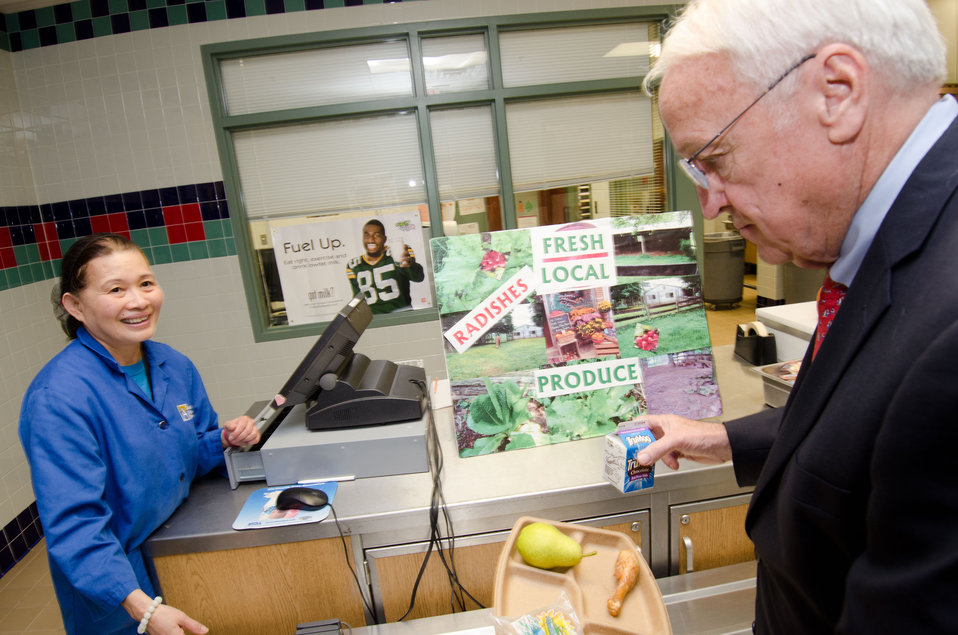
After students had their lunches, Under Secretary for Food, Nutrition and Consumer Services Kevin Concannon made his lunch choices and paid for his meal, during a National School Lunch Week event at Nottingham Elementary School in Arlington, VA, on Wednesday, October 12, 2011. (The schedule and menu were not altered for the event). Today's menu included roasted chicken, roasted butternut squash with dried cranberries, farm fresh mixed lettuce salad, turkey wraps, pita wedges, hot muffins, carrots, Asian pears and more.